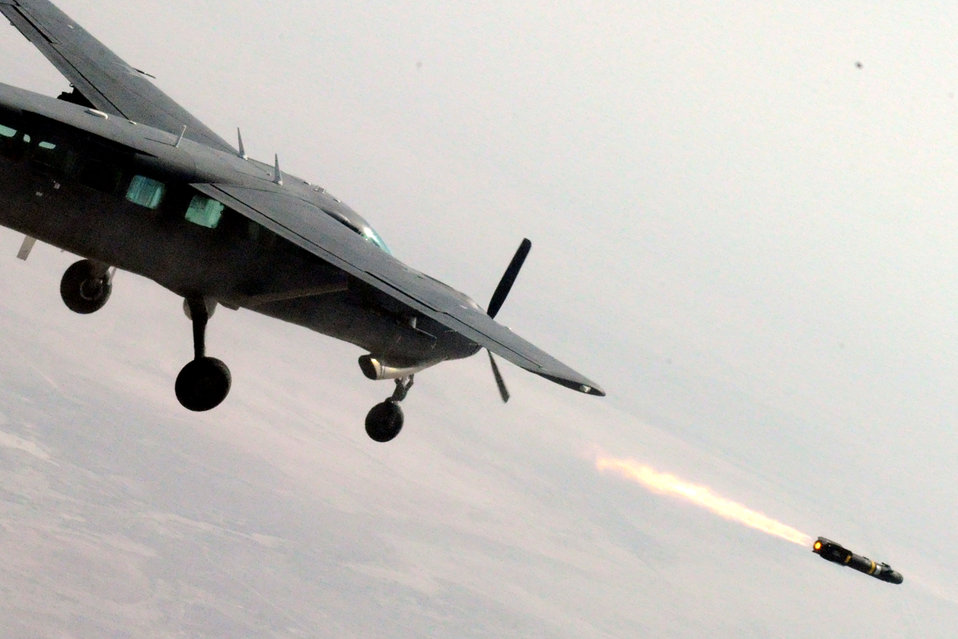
Iraqi airmen demonstrate operational capabilities in Hellfire exercise

An Iraqi air force AC-208 Cessna Caravan aircrew launches a Hellfire missile Nov. 8, 2010, at a target on the Aziziyah Training Range, south of Baghdad, . The Iraqi airmen scored a direct hit, destroying the target in their second-ever launch of a Hellfire missile. Iraqi airmen have trained continuously for the Hellfire mission, mastering the weapons load, target attack and airmanship skills necessary to maintain proficiency since completing their first Hellfire launch in 2009, also resulting in a direct hit of a training target. U.S. Air Force air advisers with the 521st Air Expeditionary Advisory Squadron in Kirkuk work shoulder-to-shoulder with Iraqi airmen.